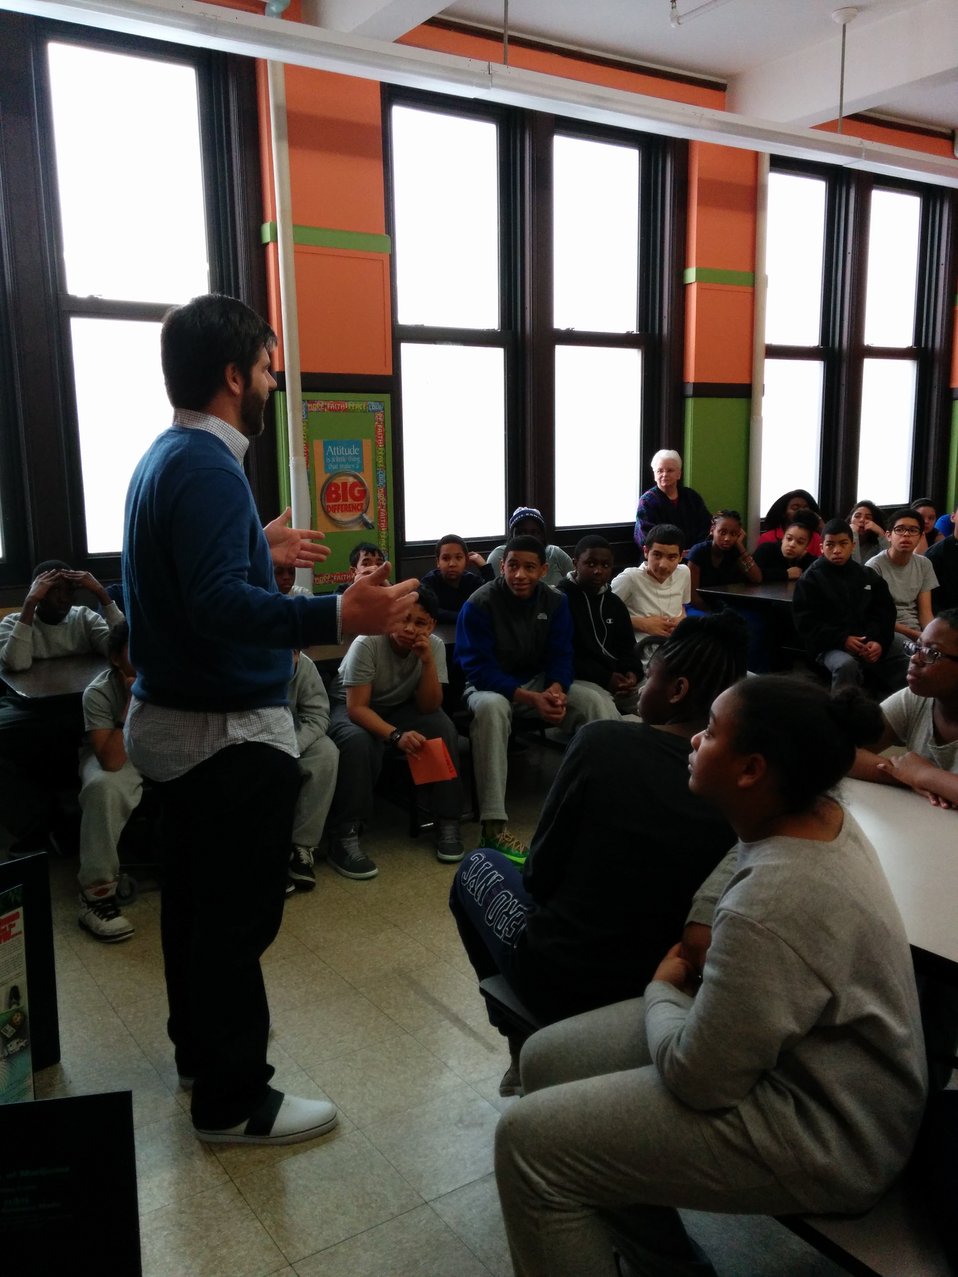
RI Teens participate in NDFW

100 students participated in the Substance Abuse Prevention Presentations at Highlander Charter School (HCS) and Bishop McVinney Middle School (BMMS) on January 31st, 2014 during National Drug Facts Week.